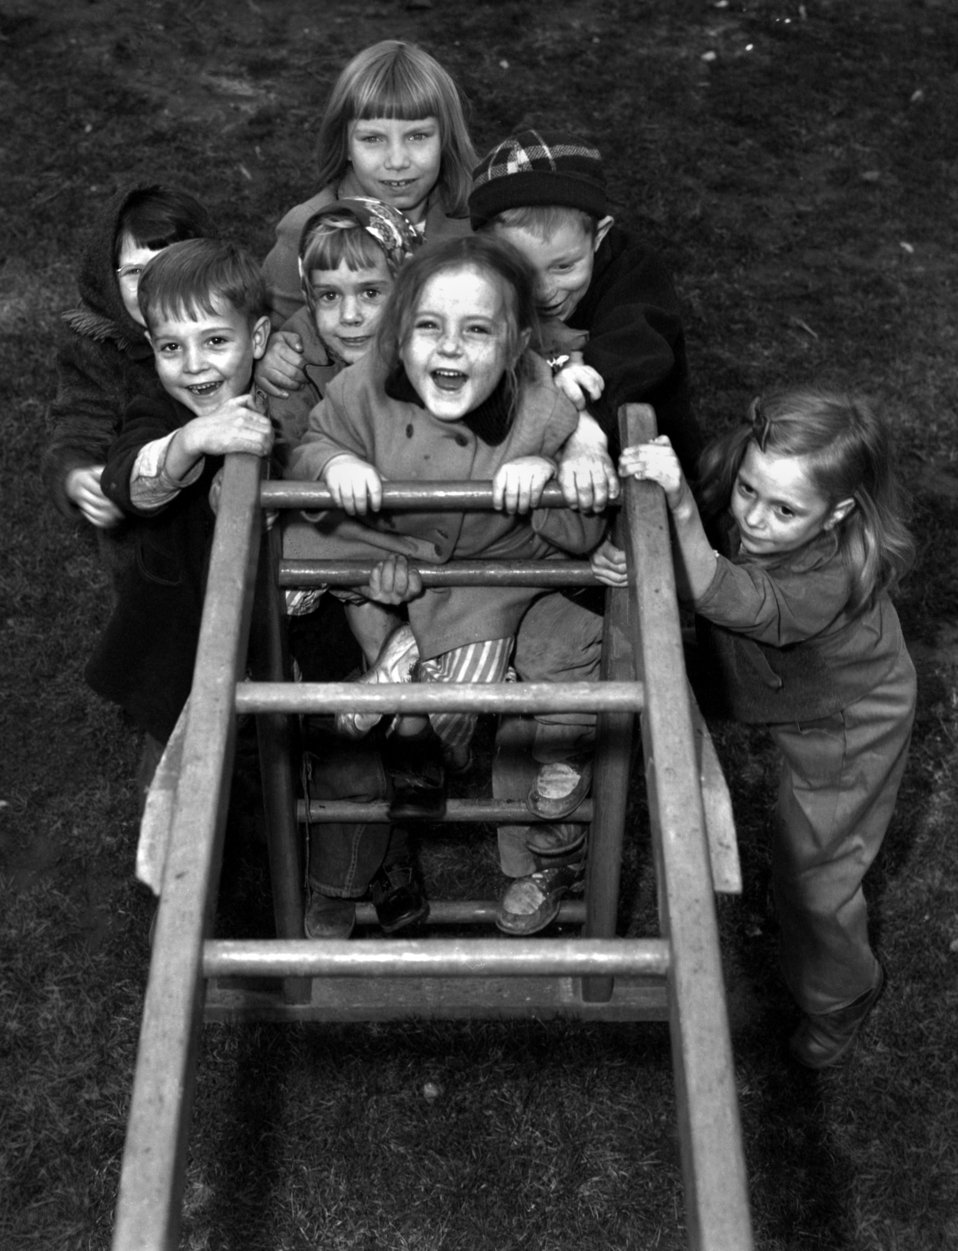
Nesper House Oak Ridge

3262-10 DOE photo Ed Westcott 1-23-1947 Child care for working mothers/famlies Oak Ridge Tennessee